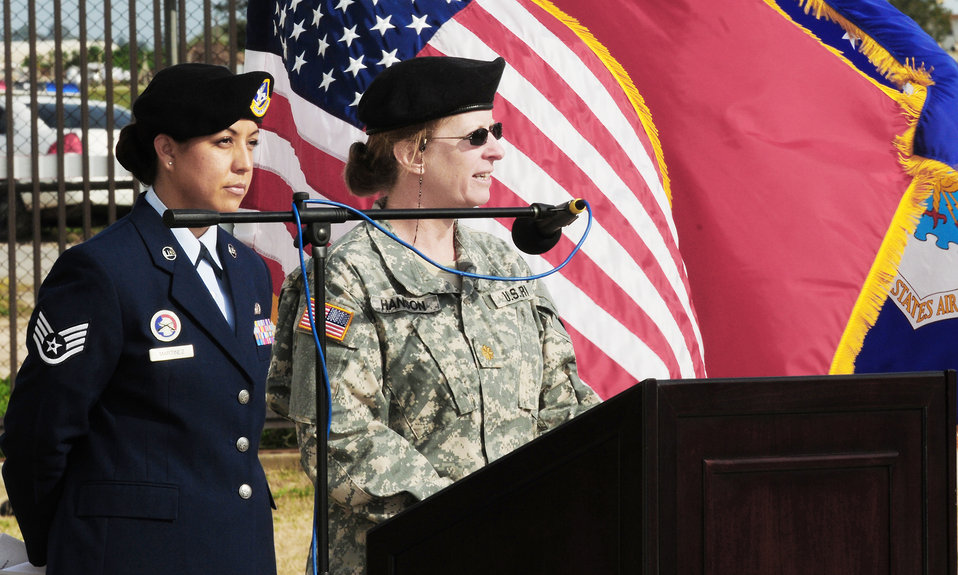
Incirlik members honor fallen SFS defender

Maj. Katheryn Hanson speaks to memorial service attendees about her experiences with Ronnie, a fallen 39th Security Forces Squadron military working dog Feb. 25, 2010, at Incirlik Air Base, Turkey. Major Hanson is a veterinarian assigned to the 39th Medical Group.